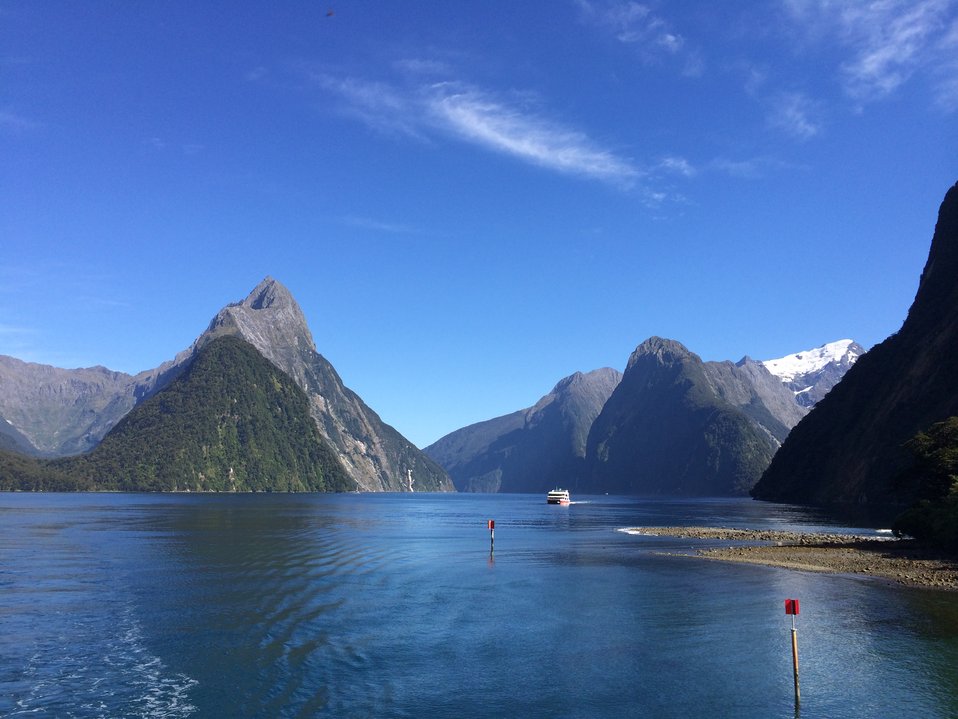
IDF 2014 Pic

The forests that cling to the steep slopes and cliffs of New Zealand’s Milford Sound are an example of the many pristine forest lands protected throughout the world.